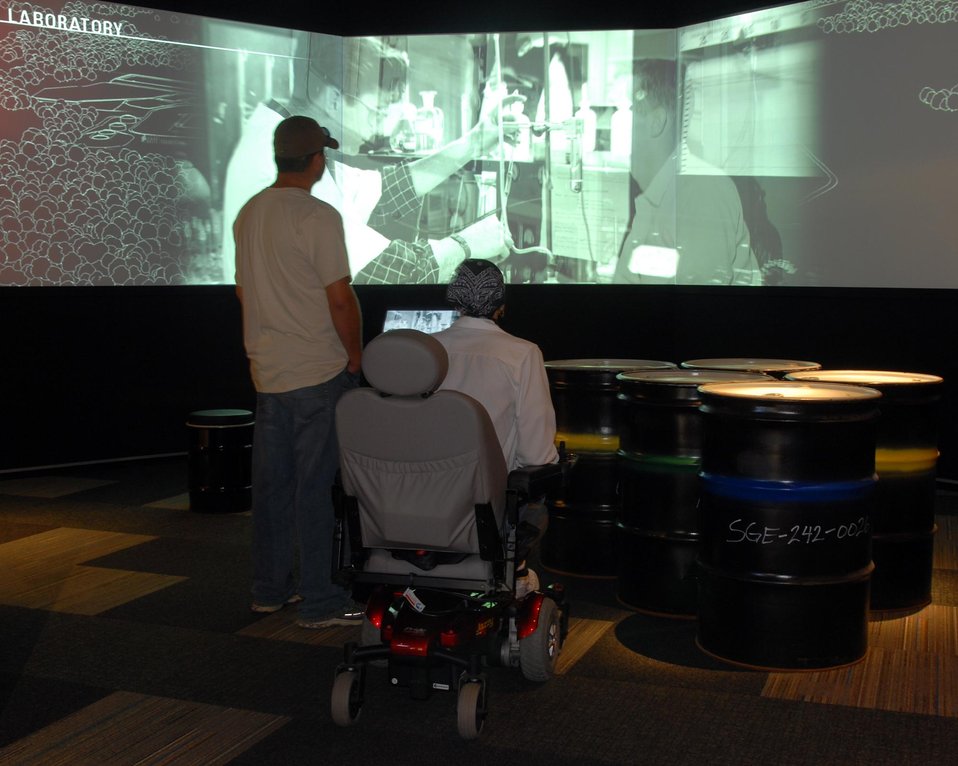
The Fernald Preserve Visitors Center exhibit area features videos that tell the site's history, including the steps involved in converting uranium ore into high-purity uranium metal.